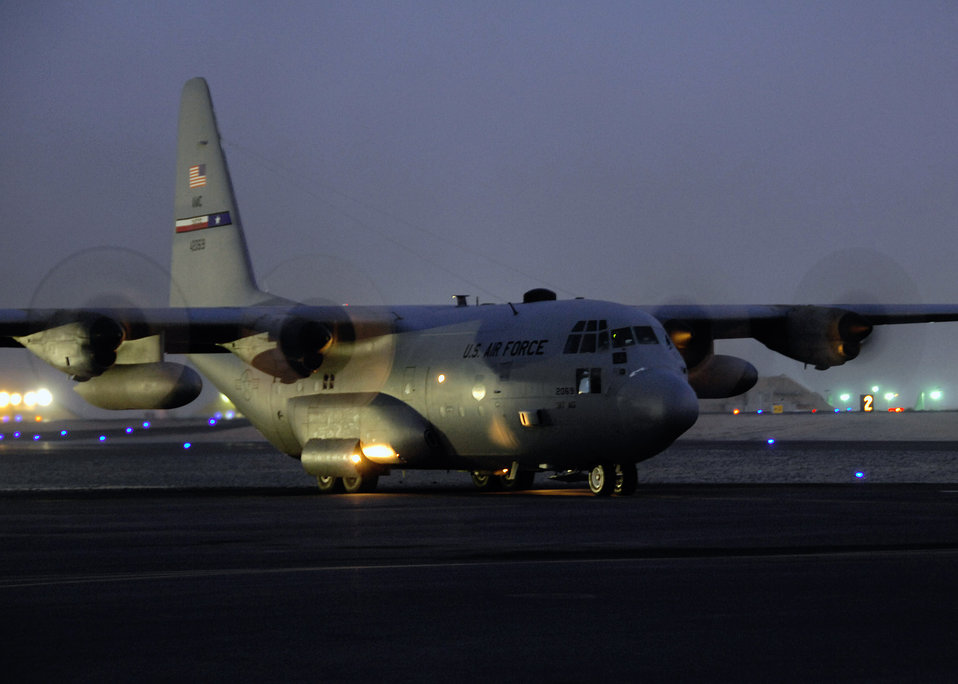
C-130s sustain transport missions

A C-130 Hercules prepares to depart on a sortie to Iraq from a base in Southwest Asia. The C-130 provides intra-theater heavy airlift, delivering tons of cargo and transporting passengers in support of Operations Iraqi and Enduring Freedom.